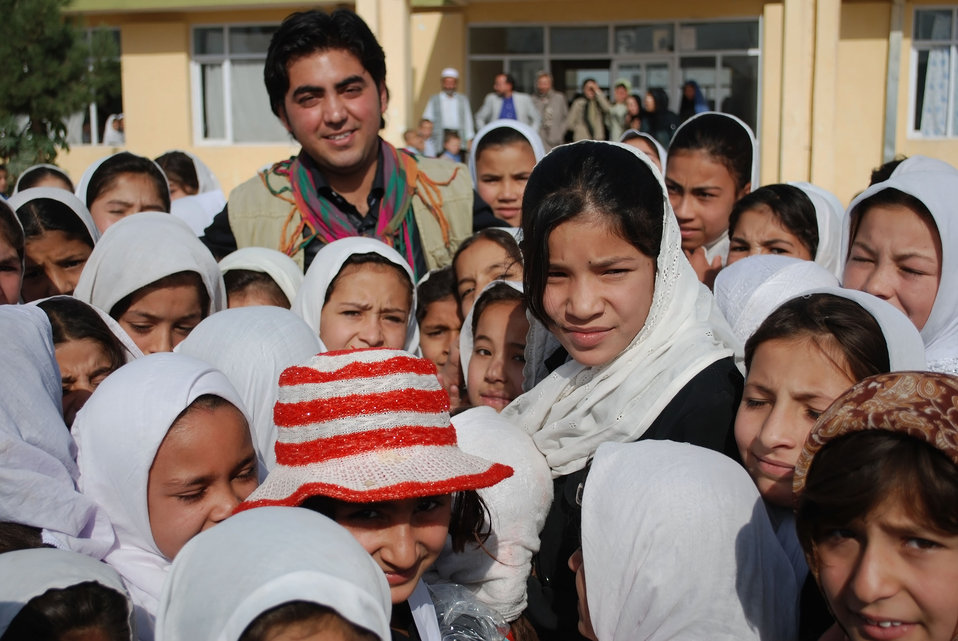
'On the Road' in Balkh Province